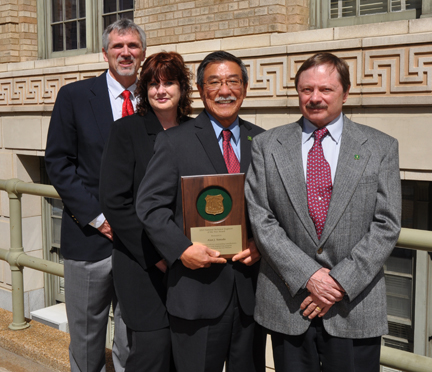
2010 EOY group

The four U.S. Forest Service recipients of Engineer of the Year awards for 2010, as nominated by their peers, are (from left): Lynn Hicks; Shonni Hanks Nelson, Alan Yamada, and Charles Warren. The recipients were awarded their plaques in a ceremony help Monday, April 4 here in Washington DC.